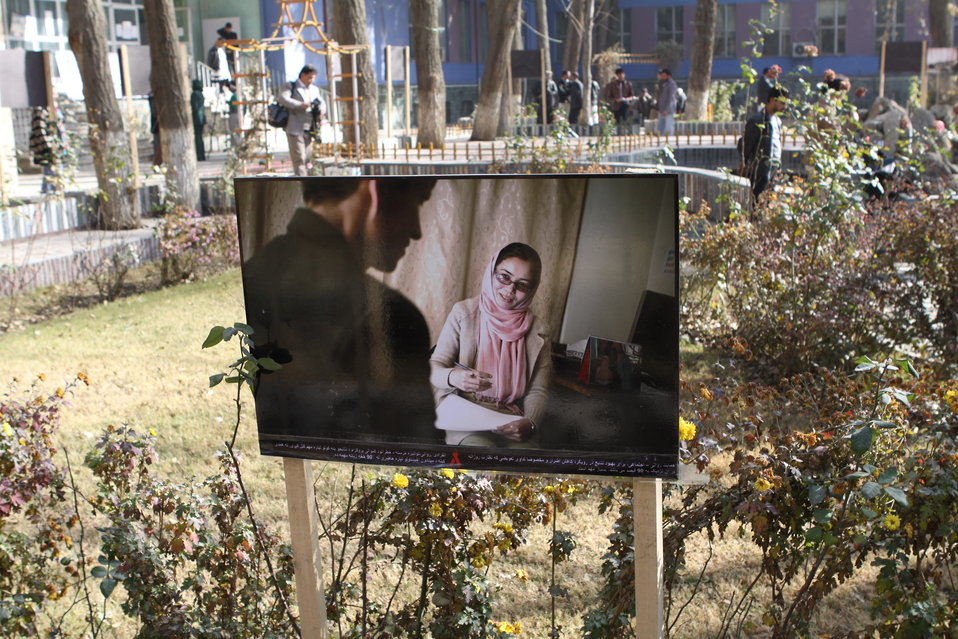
Community Health Workers Celebrated

Kabul, Afghanistan | December 5, 2010 — In support of the United Nations designated International Volunteer Day for Economic and Social Development, Afghanistan’s Ministry of Public Health celebrated its annual Community Health Worker Day today. Acting Minister of Public Health Dr. Suraya Dalil, USAID Senior Deputy Mission Director Robert Hellyer, other government officials, and international donors joined in recognizing the critical contribution of community health workers in Afghanistan and encouraging them to continue their voluntary support to their communities.
The event praised the contributions of the more than 22,000 volunteers throughout the country who deliver community level health-education, counseling, and services out of village health posts located in private homes. The Ministry of Public Health envisioned that community-based healthcare programs will actively encourage communities and families to adopt healthy lifestyles and behaviors, and provide families access to high quality and socially acceptable preventative medicine and life-saving services.
“We have 22,000 community health workers in Afghanistan that are able to implement the basic and standard medicines. They all have been trained through a job description,” said Minister Dalil. Addressing the health workers, she added, “I am proud and feel powerful that I have people like you.”
USAID-funded health projects collaborate closely with the Ministry of Public Health to improve the health and nutritional status of Afghans, provide quality primary healthcare, and promote healthy behaviors at the community and household-levels. USAID supported the training of more than 9,000 of the volunteer community health workers currently working in Afghanistan.
“On behalf of the American people, I congratulate the Community Health Workers for their diligence to gain the skills and knowledge necessary to serve their communities in this important role,” said USAID Senior Deputy Mission Director Hellyer. “USAID strongly supports community based health care and believes that quality community-based health services are essential to reaching Afghanistan’s Millennium Development Goals.”
To support the Basic Package of Health Services, USAID assisted in developing the community health worker training manual, helped train community health worker supervisors and master-trainers, facilitated in-service training, and produced and developed reporting tools, job aids, and education materials.